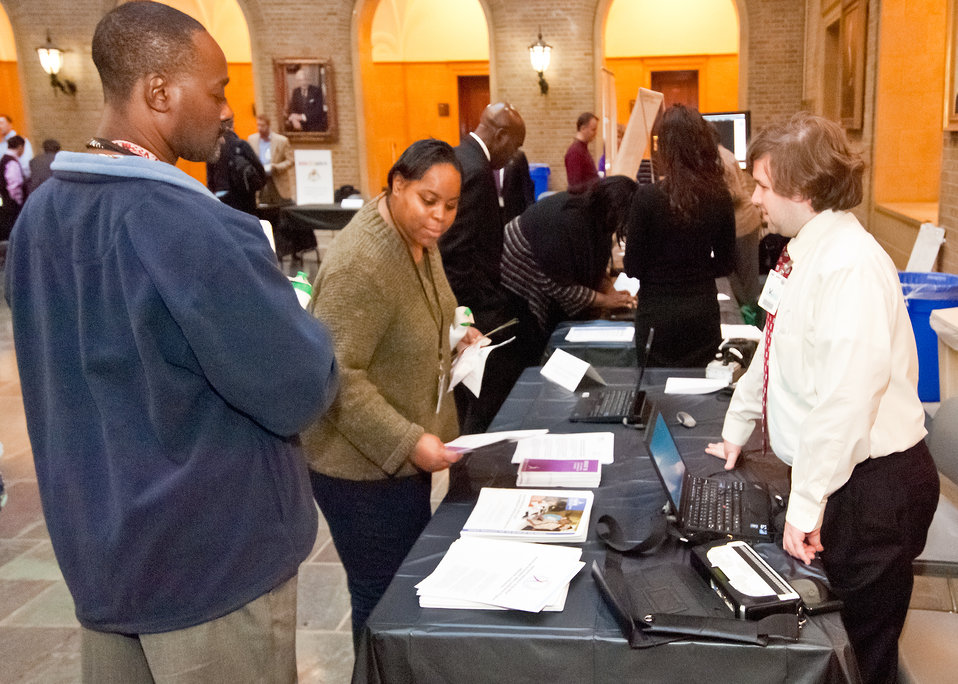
Rural Development employees Raymond Harrison (left) and Gayle Buckner (center) pick up information from National Federation of the Blind representative Tony Olivero (right) at the U. S. Department of Agriculture (USDA) Section 508 and Disability Awareness Program in Washington, DC, on Monday, Oct. 31, 2011. Sponsored by the Office of the Chief Information Officer, the theme of the event was, “Turning the Key to Unlock and Eliminate Barriers by Providing Accessibility to All.” Section 508 applies to the development, procurement, maintenance or use of electronic and information technology allowing accessibility and awareness to promote inclusiveness to employees and the public with disabilities to information technology managed by the Federal government. Section 508 is part of the USDA’s Cultural Transformation Initiative to hire more employees with disabilities.